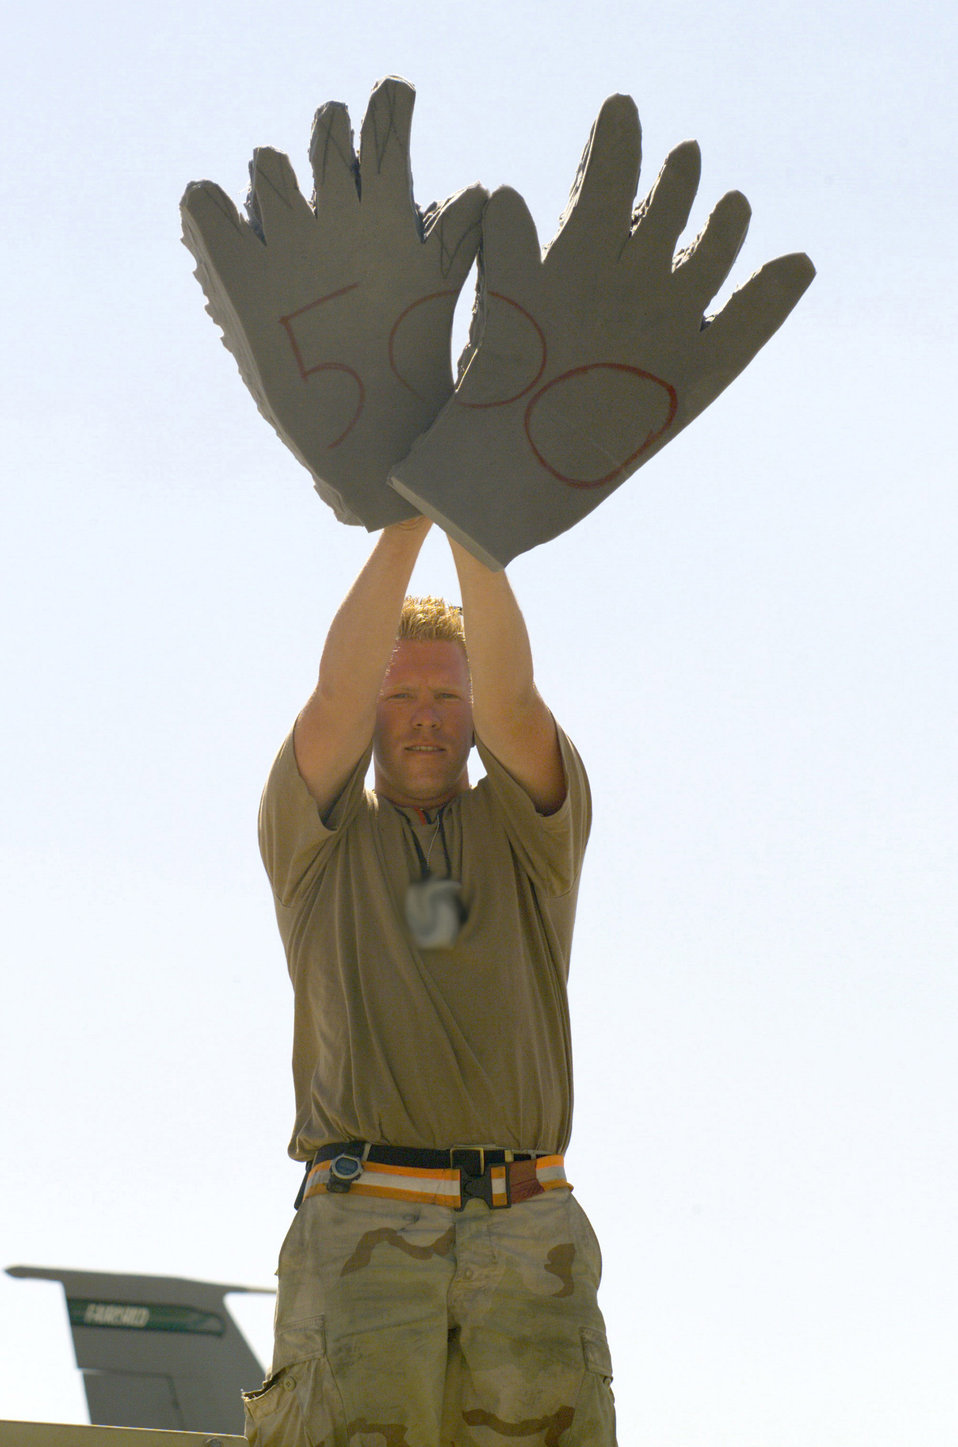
Big hands

OPERATION ENDURING FREEDOM -- Airman 1st Class Vern Holzknecht, from Fairchild Air Force Base, Wash., marshals in a KC-135R Stratotanker as it completes the squadron's 500th sortie at an operating location in support of Operation Enduring Freedom on Dec. 4.